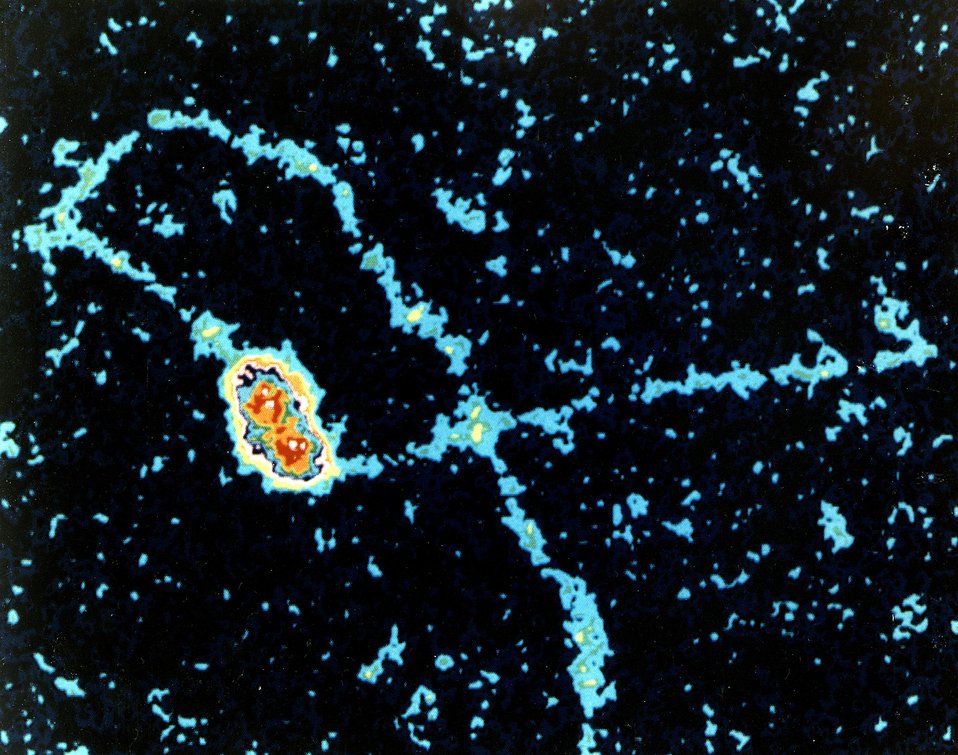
DNA replication is one of several central genetic processes that demand an association between proteins and DNA. With images such as this, the scanning transmission electron microscope (STEM) has revealed many of the details of DNA replication in the tumor virus SV40. Twelve subunits of a protein known as T antigen assemble themselves in two ringlike hexamers around the DNA, precisely at the origin of replication.